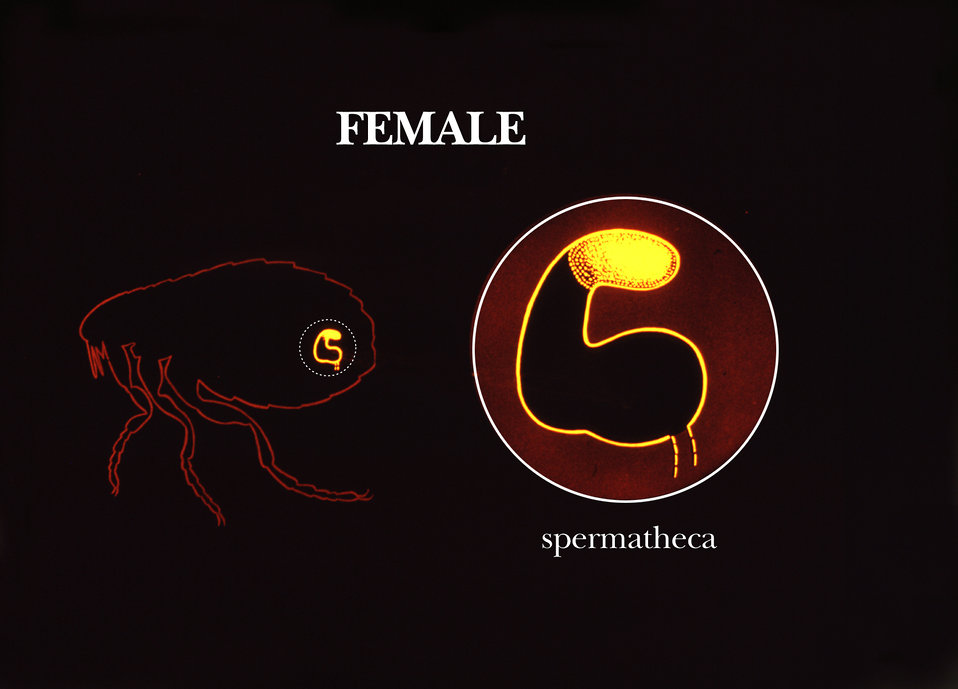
This illustration describes the anatomical location of the spermatheca within the abdomen of a typical female flea.